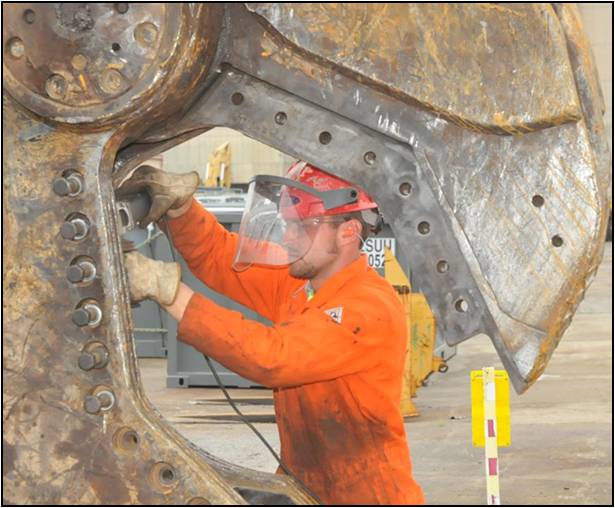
Portsmouth DandD work

A worker removes bolts from shear blades used in decontamination and decommissioning work.